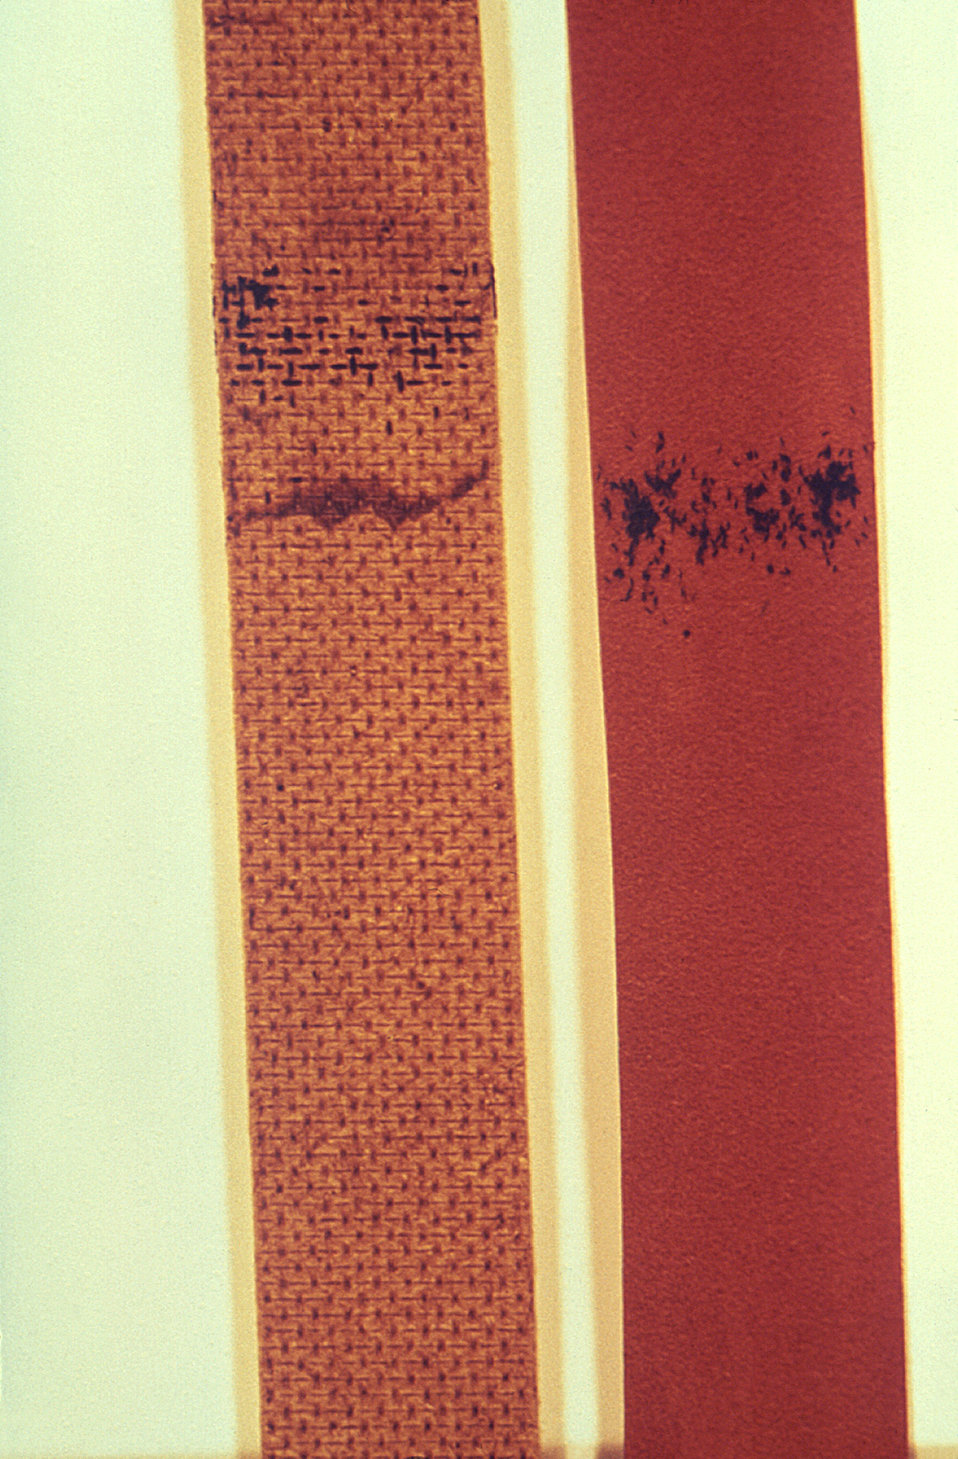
This photograph depicts a two oviposition strips, sometimes referred to as 'paddles', composed of hardboard (Lt), and velour paper (Rt).